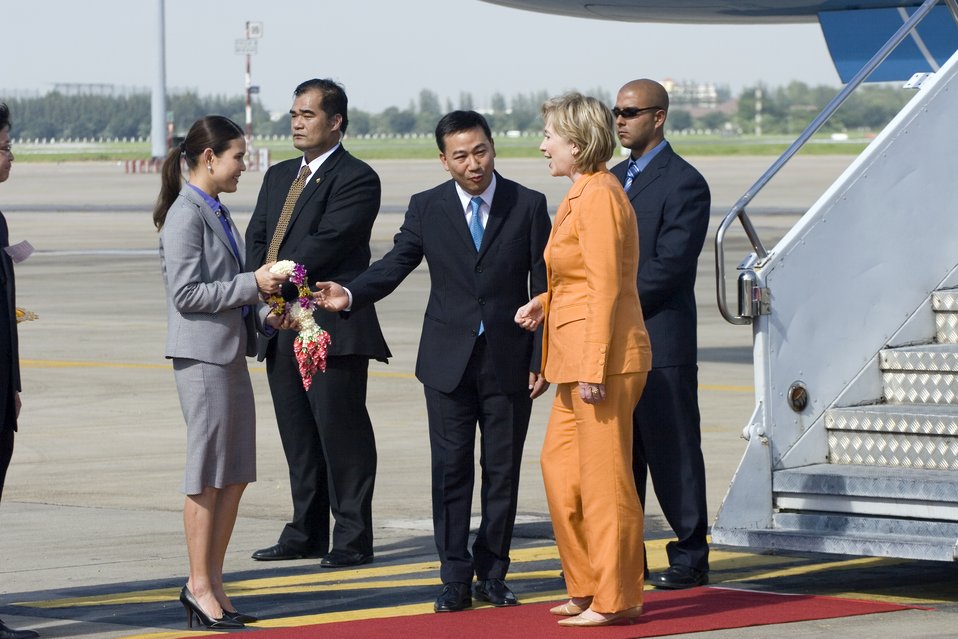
Secretary Clinton Arrives at Bangkok, Thailand

U.S. Secretary of State Hillary Rodham Clinton is greeted by Thailand's Vice Minister of Foreign Affairs Panich Vikitsreth and his wife upon the Secretary's arrival to Bangkok, Thailand July 21, 2009.